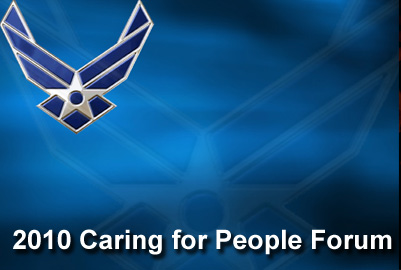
Caring for People Forum